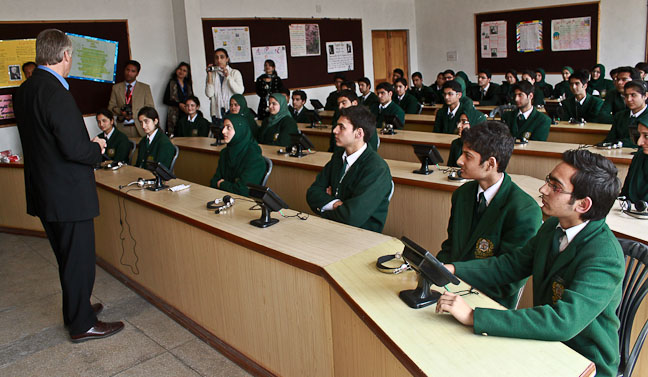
Ambassador Roemer Visits Jammu and Kashmir

U.S. Ambassador to India Timothy J. Roemer visits Jammu and Kashmir, March 17-18, 2011, to engage and listen to the people and connect with the youth of the state.